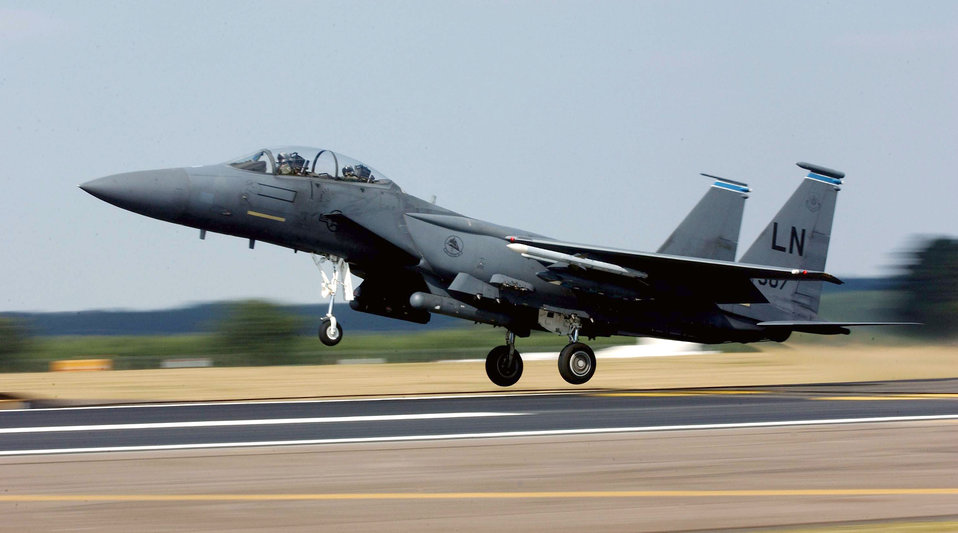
Strike Eagle

ROYAL AIR FORCE LAKENHEATH, England -- An F-15E Strike Eagle from the 492nd Fighter Squadron takes off during a mission here Sept. 4. The Strike Eagle is considered the most advanced two-seat tactical fighter aircraft in the world, and its radar system allows aircrews to pick out bridges and airfields from more than 80 miles away.